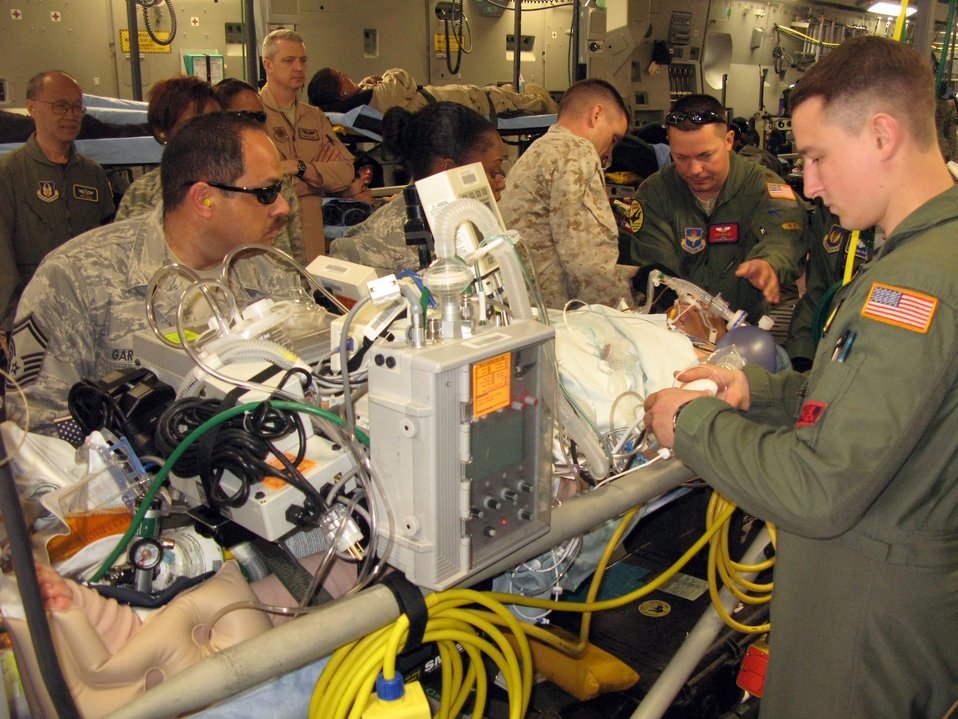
Air Force evacuation team carries wounded warriors home

Aeromedical evacuation and critical care air transport team members prepare Army Spc. Dustin Morrison, an Iowa Army National Guardsman severely wounded by an improvised explosive device attack in Afghanistan, for an April 26, 2011, flight from Ramstein Air Base, Germany, to Washington, D.C., for treatment at Walter Reed Army Medical Center.